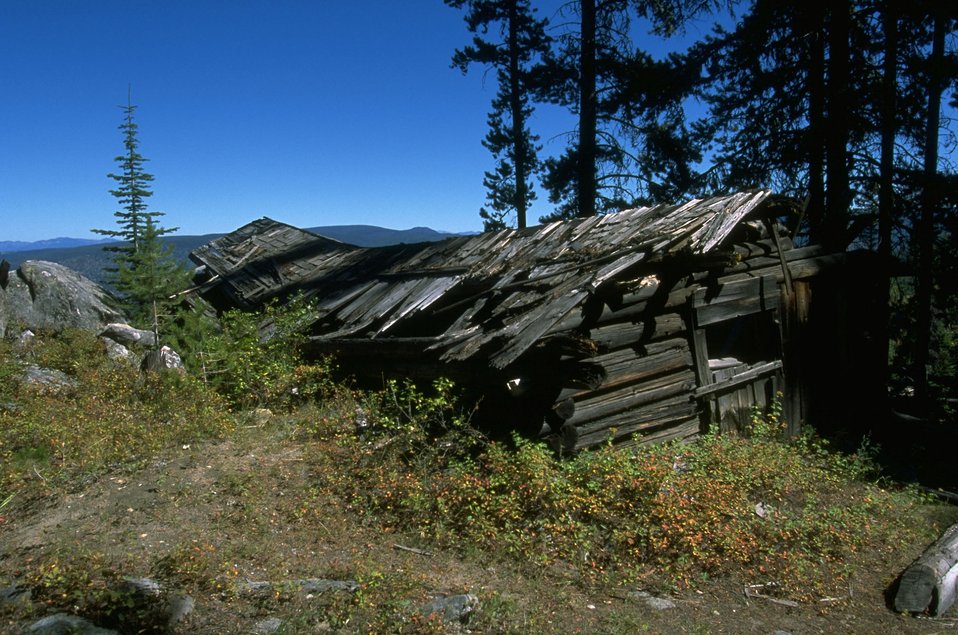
Coloma Ghost Town--collapsing cabin